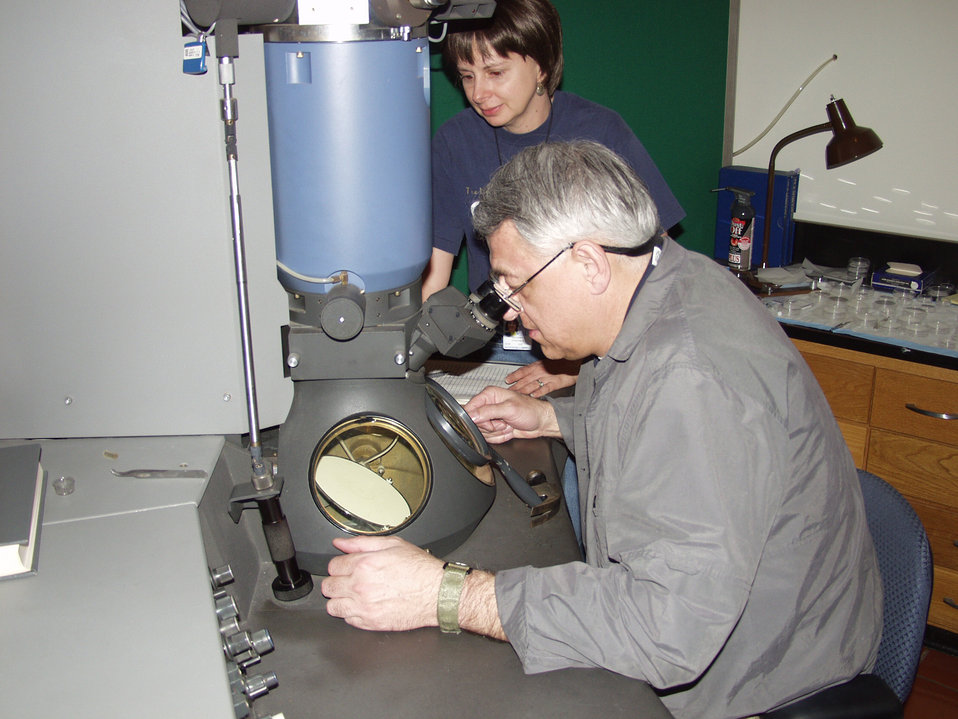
CDC researchers Thomas Ksiazek D.V.M., Ph.D. (front), and Cynthia Goldsmith, M.S. (back) are working at an electron microscope.